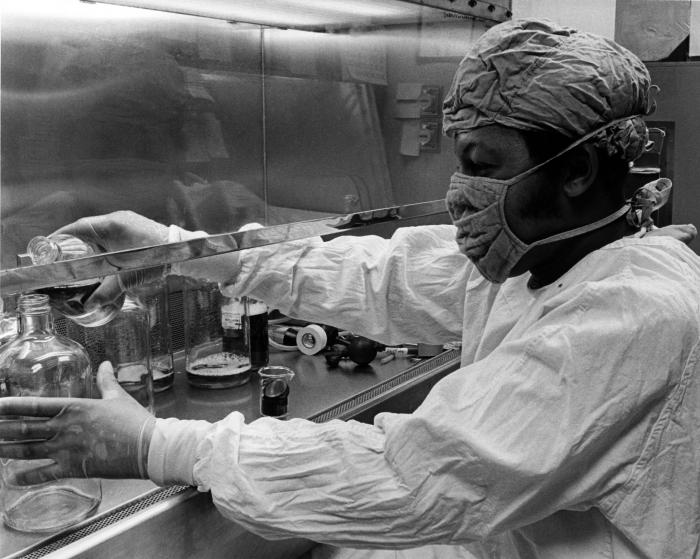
This historic image fom the 1970s, provided by the Center for Disease Control's (CDC), National Institute for Occupational Safety and Health (NIOSH), depicted a NIOSH chemist who was demonstrating techniques to insure the safe-handling of chemicals when testing field samples sent to Cincinnati. Note that the chemist was wearing protective gloves, gown, mask, and was behind a glass barrier guarding his face from accidental contamination due to chemical spills. The ventilated hood worked under the principle of negative pressure, which brought the laboratory air into the hood, and sent it out through a filtered system, thereby, preventing contaminate vapors from escaping into the lab environment.